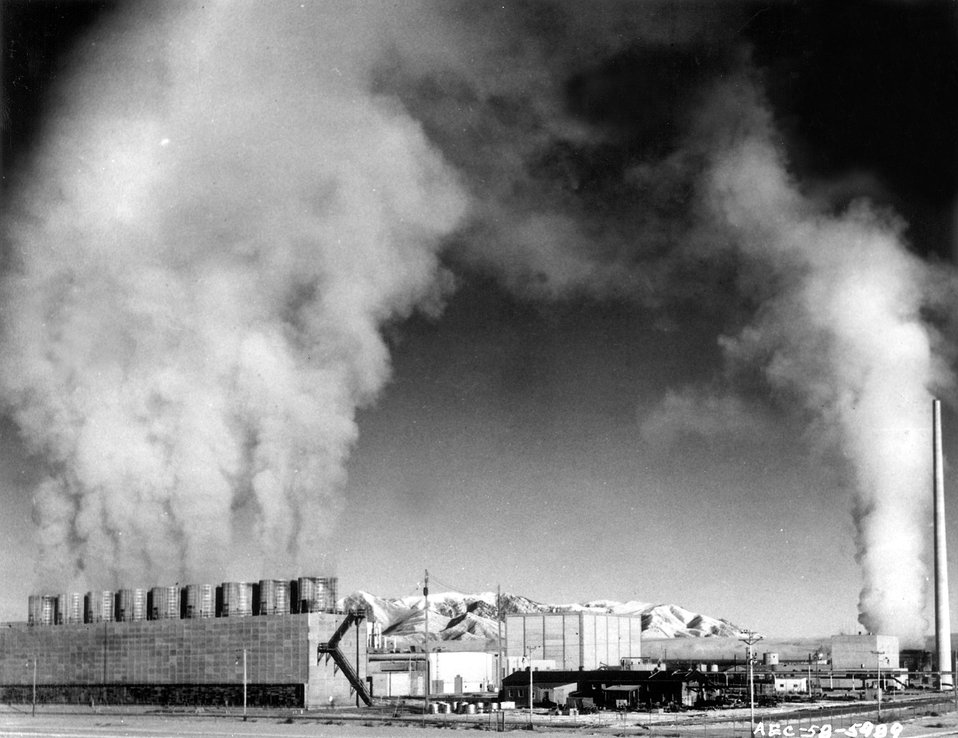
(Left) The Engineering Test Reactor (ETR) operating at 175,000 tkw. (Right) The Materials Testing Reactor (MTR) operating at 40,000 tkw. Both reactors are key reactor development facilities in operation at the National Reactor Testing Station. Circa 1958.